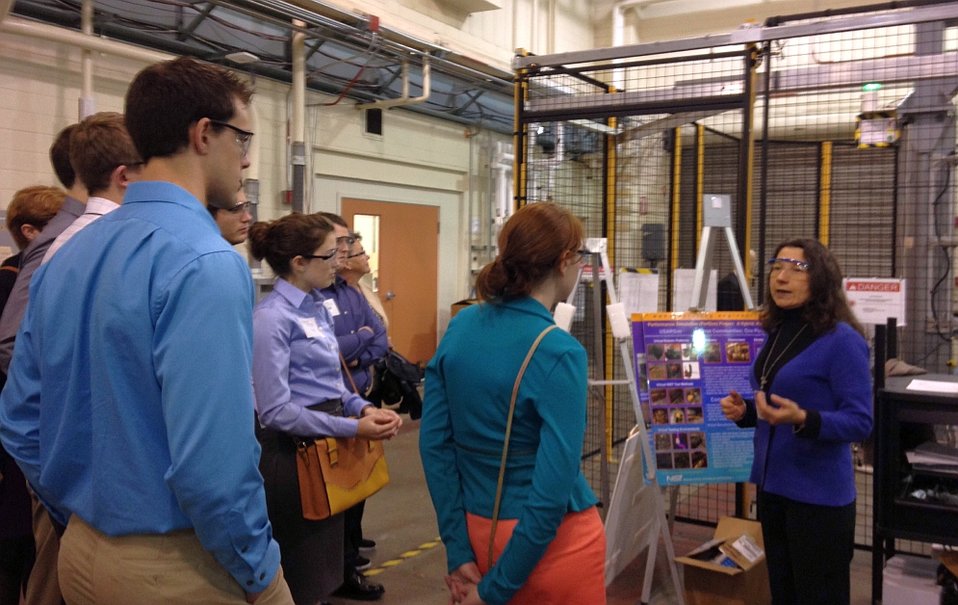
Oklahoma State University Tour

Dr. Elena Messina (right) of NIST’s Engineering Laboratory explains the NISt Manufacturing Robot Testbed to visiting undergraduate engineering students from Oklahoma State University.